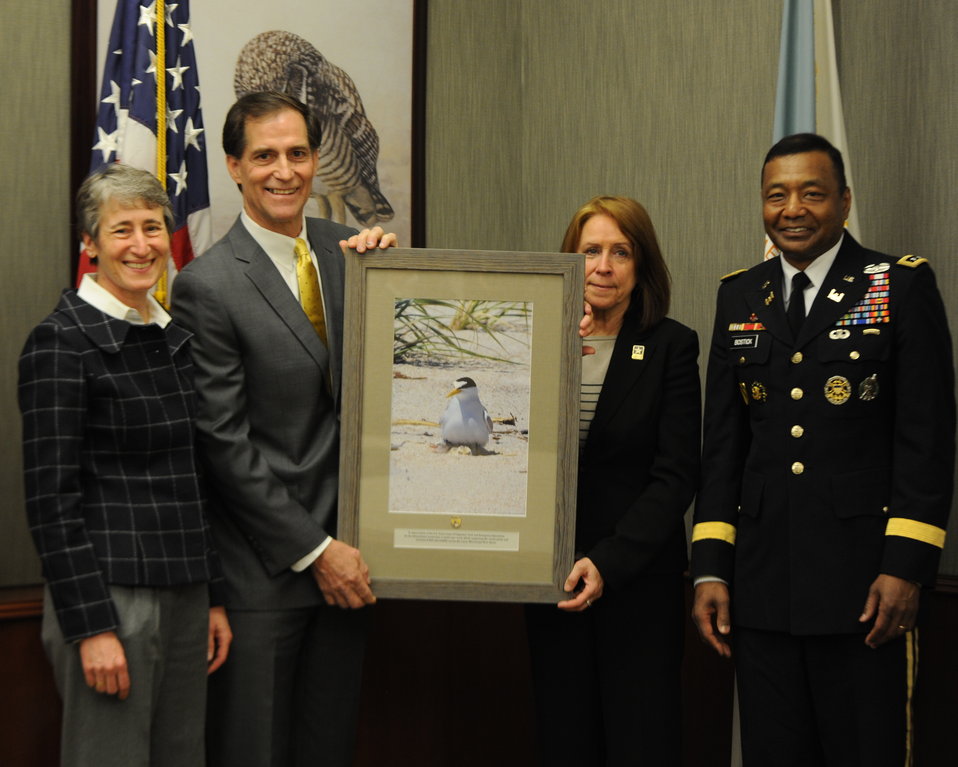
DOIFWS-Corps

Secretary of the Interior Sally Jewell, U.S. Fish and Wildlife Service director Dan Ashe recognize Assistant Secretary of the Army for Civil Works Jo-Ellen Darcy, and U.S. Army Corps of Engineers commanding general Lt. Gen. Thomas P. Bostick for an innovative landscape-level conservation approach. (Shown: Commemorative photowith plaque of Interior least tern with chick on nest) Photo by Tami Heileman, DOI (public domain photo)

FOR IMMEDIATE RELEASE APRIL 30, 2014

PHOTOS ON FLIKR/SOUTHEAST

Contacts: USFWS: Tom MacKenzie, 404-679-7291, tom mackenzie@fws.gov
USACE: Gene Pawlik, 202-761-7690, Eugene.A.Pawlik@usace.army.mil

U.S. Fish and Wildlife Service Director Honors U.S. Army Corps of Engineers for Innovative Landscape-Level Conservation Approach

Washington D.C. – U.S. Fish and Wildlife Service Director Dan Ashe yesterday praised a collaborative effort across the lower Mississippi River Basin with the U.S. Army Corps of Engineers (USACE) that has helped advance conservation for three endangered species.

The collaboration highlights the responsibility and opportunity for all federal agencies to conserve endangered and threatened species under the Endangered Species Act (ESA). This joint effort by the Corps and the Service proves that by working to incorporate the needs of threatened and endangered species in the work that they do, federal agencies can help species recover.

Specifically, it lays the foundation for broad habitat conservation actions that will help scientists meet population objectives more quickly for the Interior least tern, pallid sturgeon and fat pocketbook mussel. The resulting habitat improvements will also benefit other fish and wildlife reliant on the Mississippi River Basin.

Both the overall approach and the techniques the agencies have developed under it can be implemented nationwide.

“The U.S. Fish and Wildlife Service and the U.S. Army Corps of Engineers are seeing positive conservation results already thanks to steps included in this cost-effective approach,” said Ashe. “This is significant as it demonstrates that conservation can coexist with transportation, national security, and the region’s economic needs.”

The success stems from progressive steps the Corps and Service took under Section 7(a)(1) of the ESA that helped pave the way for subsequent consultations under the act. The end result was a transformation of the Corps’ Channel Improvement Program – a flood control and navigation strategy from a primary threat into a primary conservation tool for the three listed species. The Corps is using water and sediment that previously flowed directly down the river to now enhance aquatic habitats in the lower Mississippi River Basin. This will provide better opportunities for Americans to fish, bird watch and boat on one of our nation’s greatest rivers. Not only will the listed species benefit, so will recreational species such as bass, catfish and crappie, boosting local economies.

'Together the U.S. Army Corps of Engineers and US Fish and Wildlife Service have built a foundation for future cooperation,” said Assistant Secretary of the Army for Civil Works Jo-Ellen Darcy. “This harmonious approach will avoid huge amounts of work and money for both agencies moving forward, all while best serving the Interior Least Tern, the pallid sturgeon and the fat pocketbook mussel.'

Thanks to the steps taken that are included in this plan, the population status of all three species is improving. Indeed, a recently completed five-year review for the Interior least tern recommended delisting it due to recovery, citing an increase in the tern population from 6,000 to 10,000 birds. The Service is now in the process of putting in place the necessary monitoring plans, conservation agreements, and population models in hopes of moving forward with a proposed delisting in the near future.

“The U.S. Army Corps of Engineers appreciates this recognition today of the successful collaboration between our agencies and specific contributions by USACE team members,” said Lt. Gen. Thomas P. Bostick, U.S. Army Corps of Engineers commanding general. “The Corps of Engineers, together with our partners, is committed to a 200-year vision for the Mississippi Watershed – America’s Watershed – that balances the Nation’s needs, such as flood risk reduction and management, environmental sustainability, and recreation. The Lower Mississippi Conservation Plan is a stellar example of that commitment.”

The approach has also been credited with expanding the fat pocketbook mussel population into new areas and with increased pallid sturgeon numbers, all with no negative effects on critical flood control or navigation missions.

“This is really a milestone in conservation thinking and planning,” said Ashe. “It goes to show that when agencies plan ahead for conservation, it pays off all around, both in terms of saving money and staff time, as well as benefiting our nation’s wildlife resources for the American people.”

The Service is using the success of the Corps’ Mississippi Valley Division conservation program to bolster efforts to expand this approach nationwide for both agencies and is looking at similar opportunities with other federal agencies.

About The U.S. Fish and Wildlife Service
The mission of the U.S. Fish and Wildlife Service is working with others to conserve, protect, and enhance fish, wildlife, plants, and their habitats for the continuing benefit of the American people. For more information on our work and the people who make it happen, visit www.fws.gov. Connect with our Facebook page at www.facebook.com/usfwssoutheast, follow our tweets at www.twitter.com/usfwssoutheast, watch our YouTube Channel at www.youtube.com/usfws and download photos from our Flickr page at www.flickr.com/photos/usfwssoutheast.